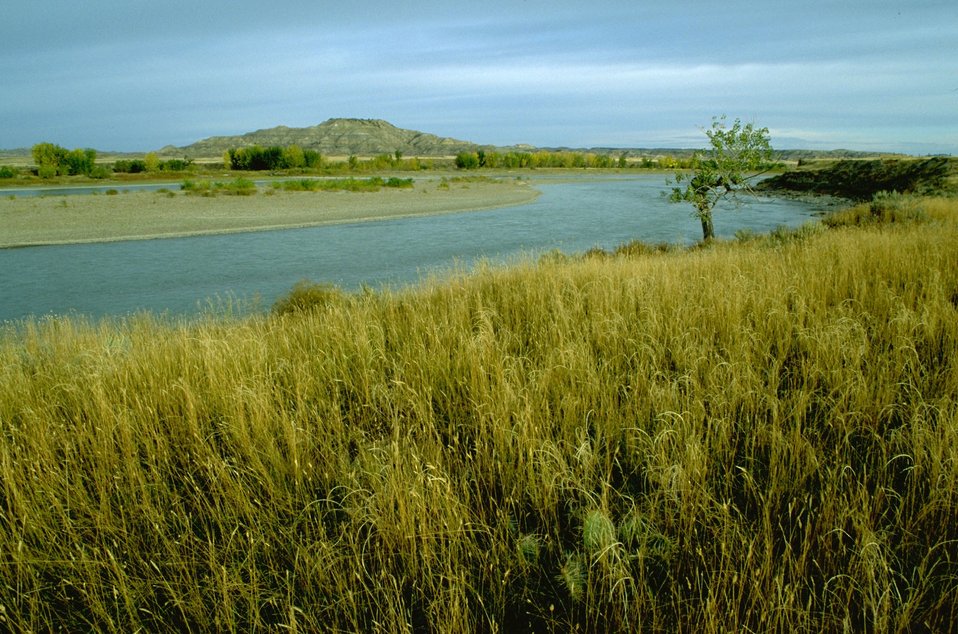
Sheridan Butte along the Yellowstone River